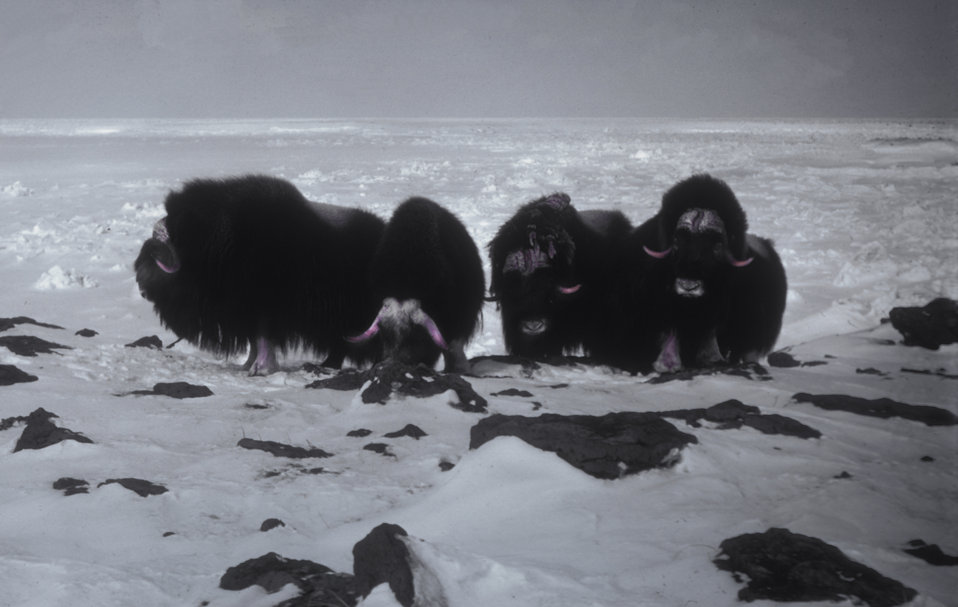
Muskox at Dahkit Cove, Nunivak Island

Muskox were reintrocuced to Alaska at Nunivak Island in 1935 by the United States Fish and Wildlife Service, USFWS. They are believed to be survivors of the Pleistocene era and to have first come to North America from 200,000 to 90,000 years ago.
These sturdy animals can be domesticated and yield excellent meat, milk, and wool. The wool (qiviut) is very high in insulation value and is prized for its softness and lightness. Qiviut wool yarn sells for upwards of $80.00 per ounce (28 g).
These social animals live in small herds of 10 to 20 animals. When threatened they form a defensive perimiter, tail to tail, with their heads facing out in a stationary ring around their calves.

Photo Credit: Jerry Hout/USFWS
Photo taken 3 March 1966